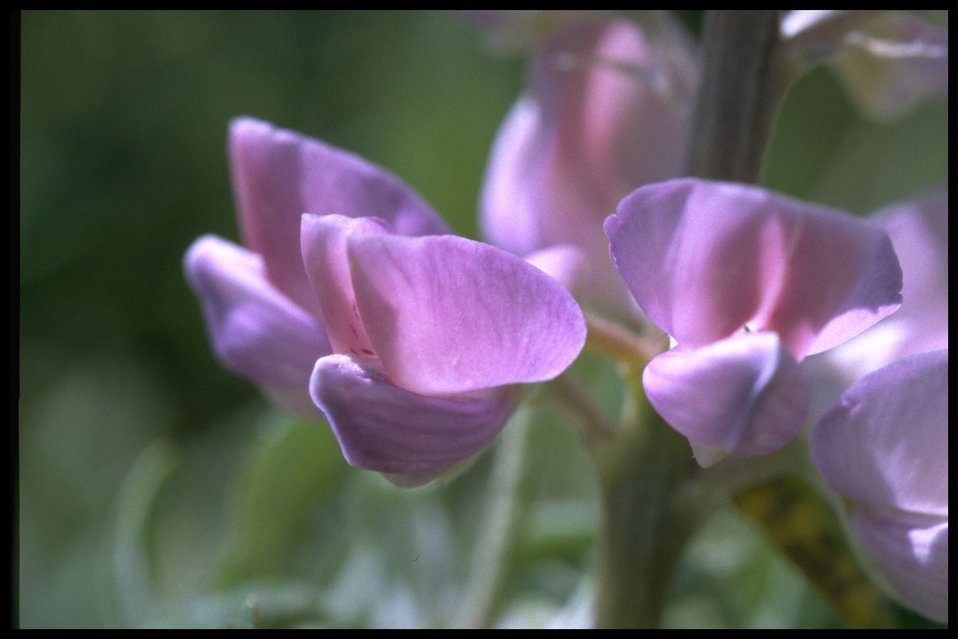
Closeup shot of Bigleaf Lupine wildflowers.